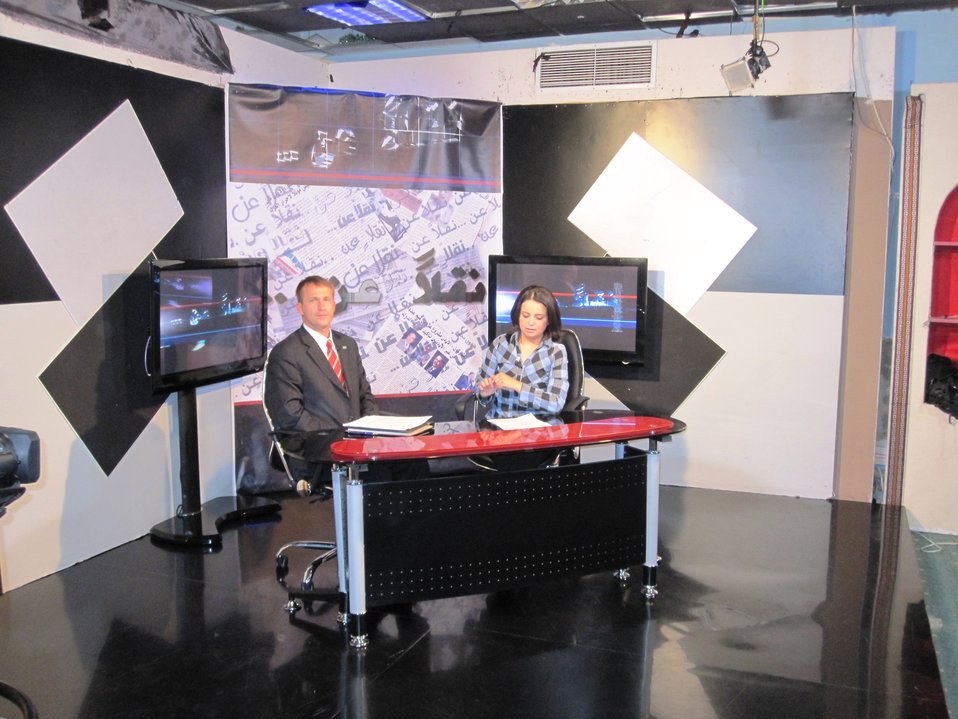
PAO Baker Is Interviewed on Al-Shababiya Television

Public Affairs Officer Joshua Baker is interviewed on Al-Shababiya Television promoting a project being administered by a grant from the Ambassador’s Fund for Cultural Preservation in Tripoli, Libya, on August 8, 2010.